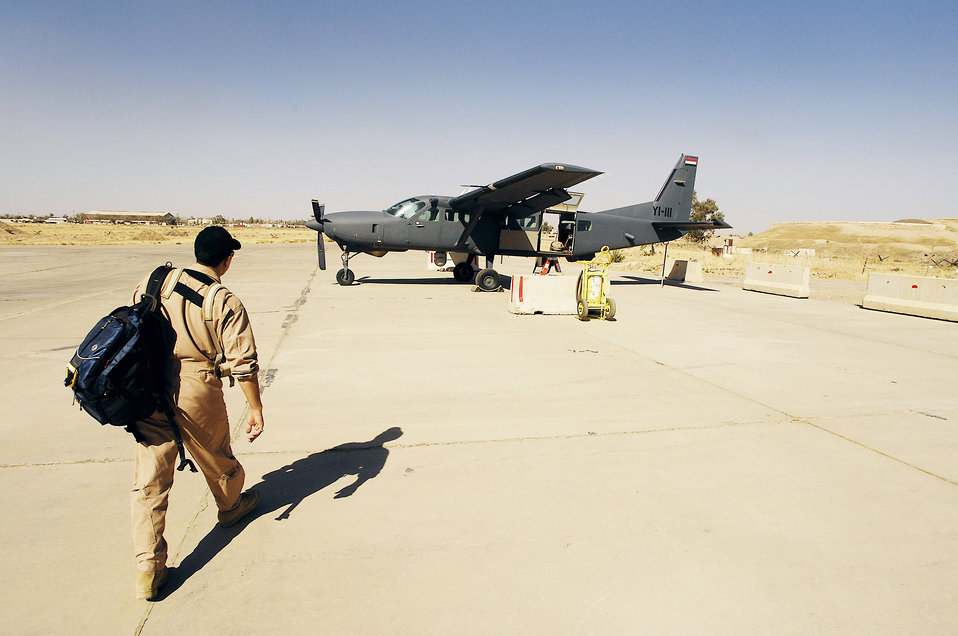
Iraqi airmen score bull's eye with Hellfire missile

An Iraqi pilot walks to a Iraqi AC-208 Caravan for a training mission at Kirkuk Regional Air Base, Iraq. For the first time since the re-formation of the Iraqi air force, an Iraqi pilot fired a missile from an a AC-208 Nov. 04, 2009, at a target on a bombing range near Al Asad Air Base, Iraq.